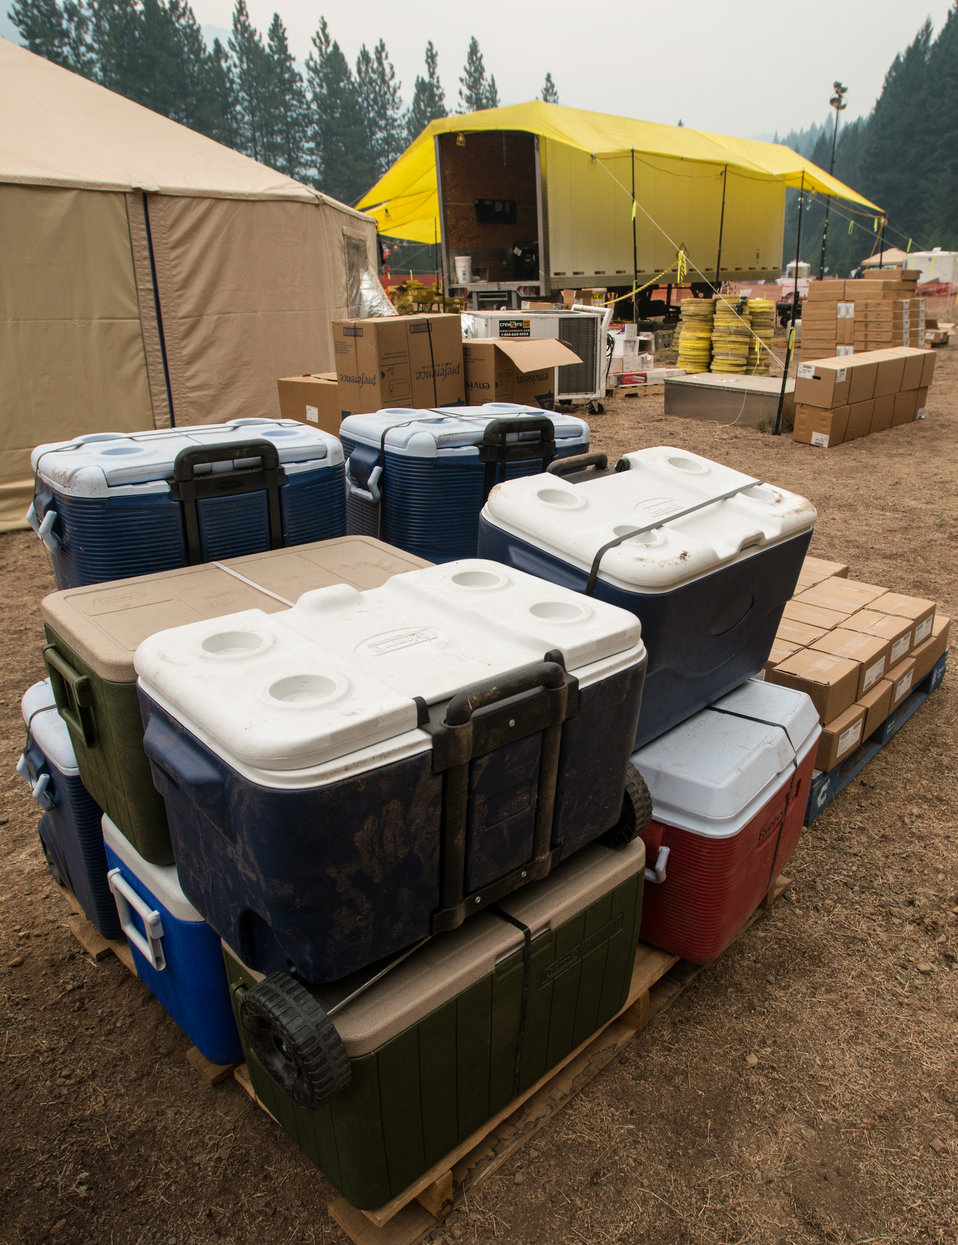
Ice chests available for firefighters at the Salmon River Complex Fire burning northwest of Sawyers Bar and west of Etna and Yreka, CA in the Klamath National Forest, on Tuesday, Aug. 6, 2013. It is vital that when a firefighter needs fire resistant clothing, a Mccloud Tool, Pulaski Axe, Combi Tool, pumps, connectors and hoses to draw water from a portable reservoirs to pressurize hand line (fire hoses), they go to this centralized point to get readily available item for issue or replacement as needed. These supplies have been shipped from the National Interagency Supply Cache System depots and/or other caches to this and other fires across the nation.